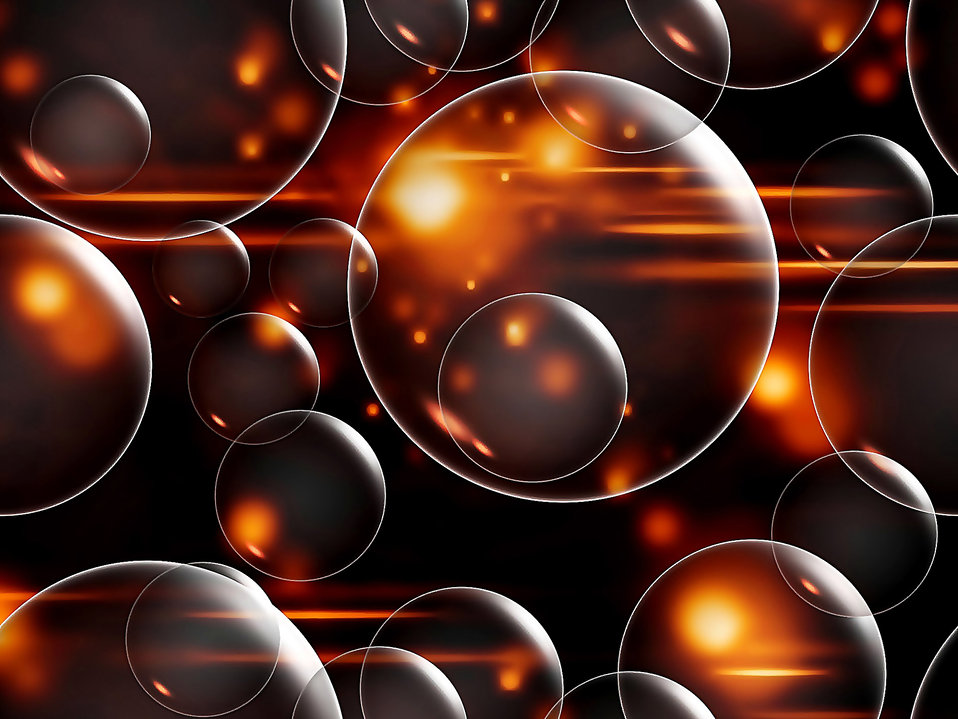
Background 191

Background.